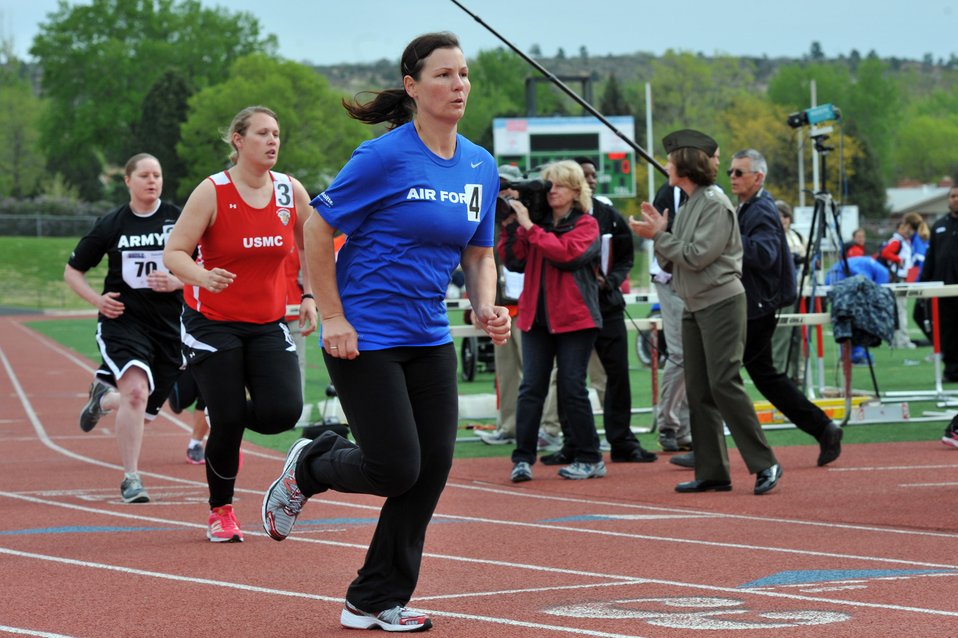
2011 Warrior Games

Air Force athlete Stacy Pearsall runs in the 800 meter dash May 17, 2011, during a track event at the 2011 Warrior Games at the U.S. Olympic Training Center in Colorado Springs, Colo. Some 200 wounded warriors and disabled veterans from all the military services are competing in paralympic-style athletic events May 16 through May 21.